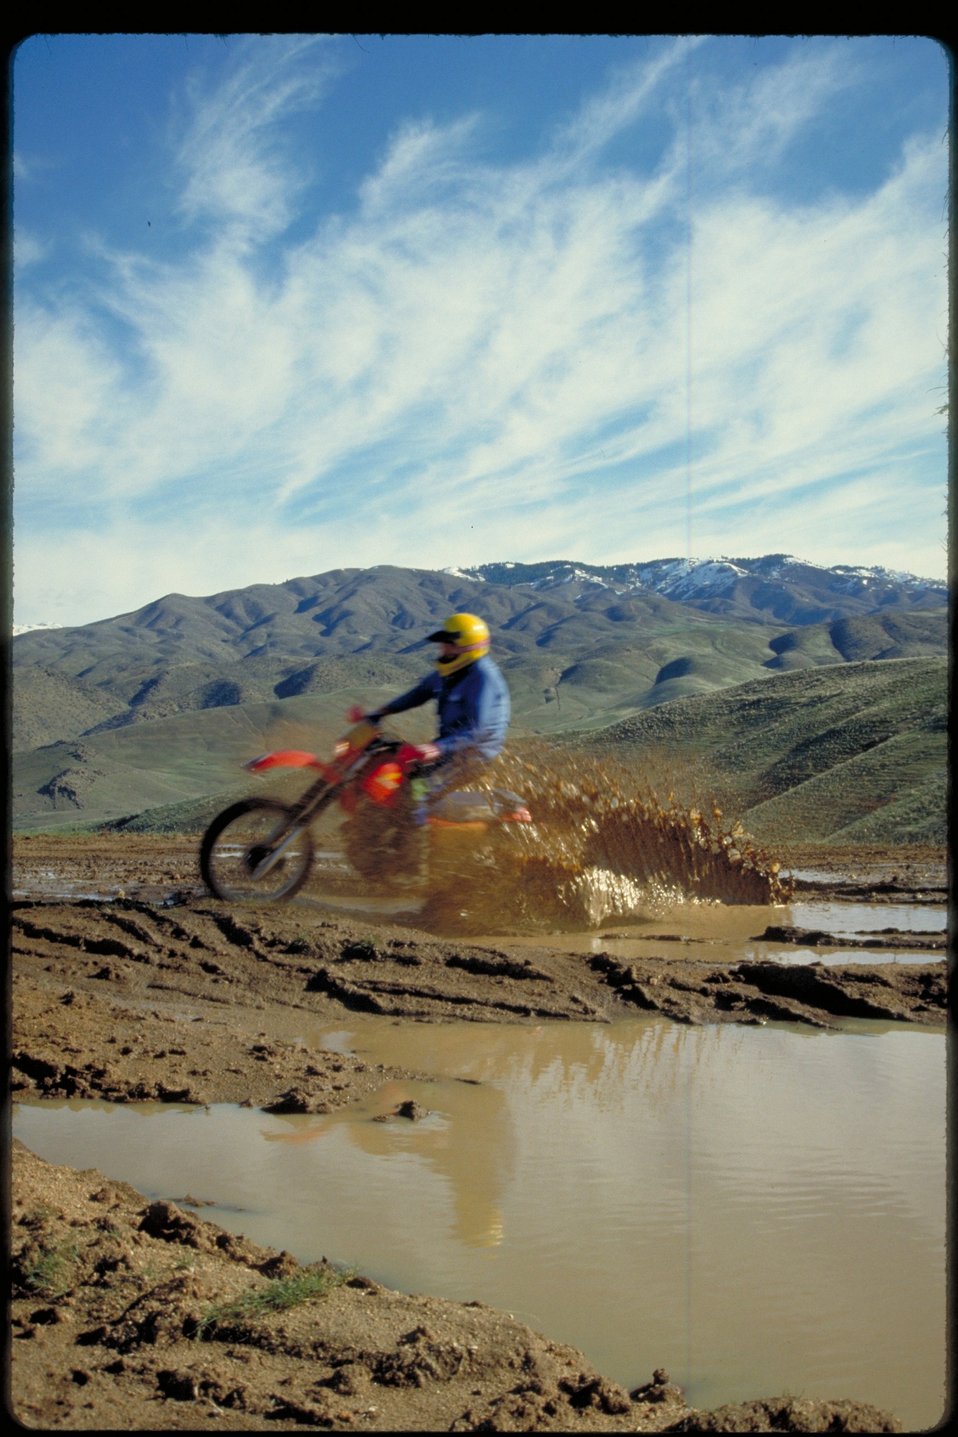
Dirtbiking on Boise front Four Rivers Field Office LSRD Lower Snake River District